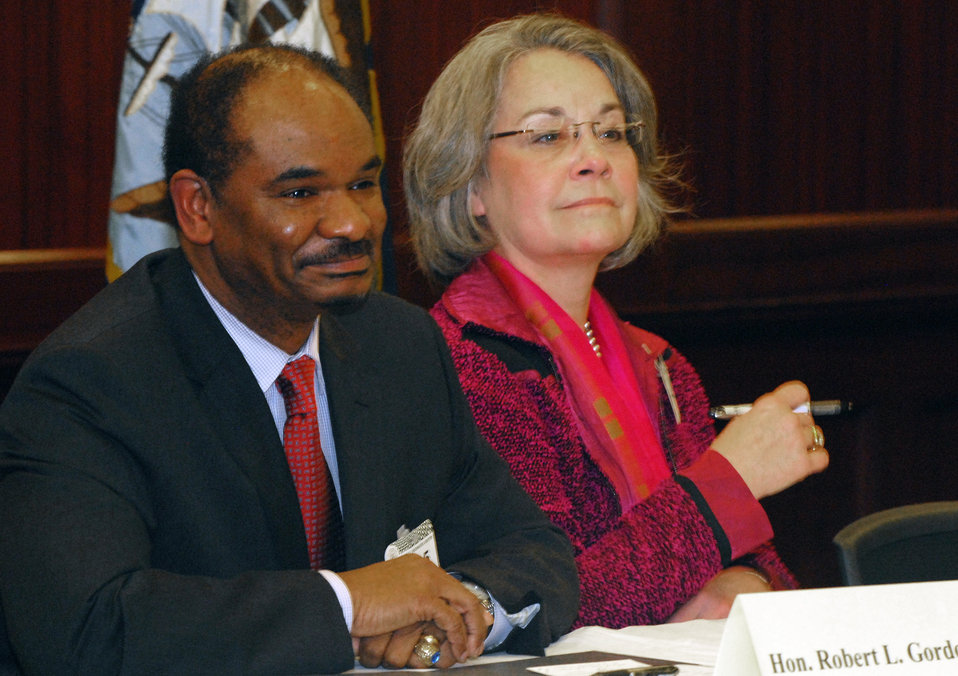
DOD strives to strengthen military families

Robert L. Gordon III and Karen Guice take questions Feb. 17, 2011, during the Congressional Military Family Caucus Kickoff in the U.S. Capitol building in Washington. Mr. Gordon is the deputy assistant secretary of defense for military community and family policy. Ms. Guice is the executive director of the Federal Recovery Coordination Program.